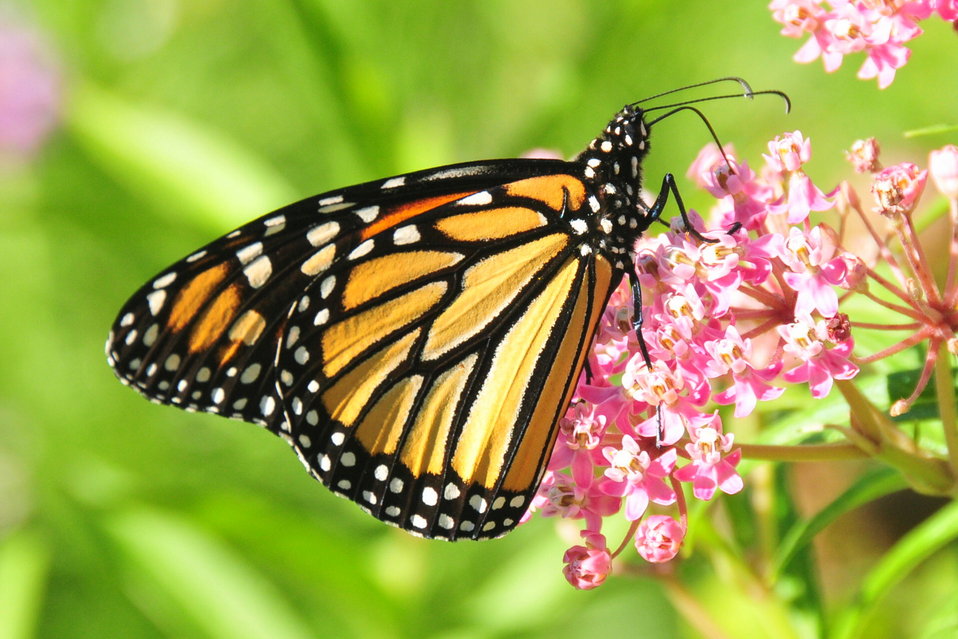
Monarch feeding on Swamp Milkweed Sand Lake NWR